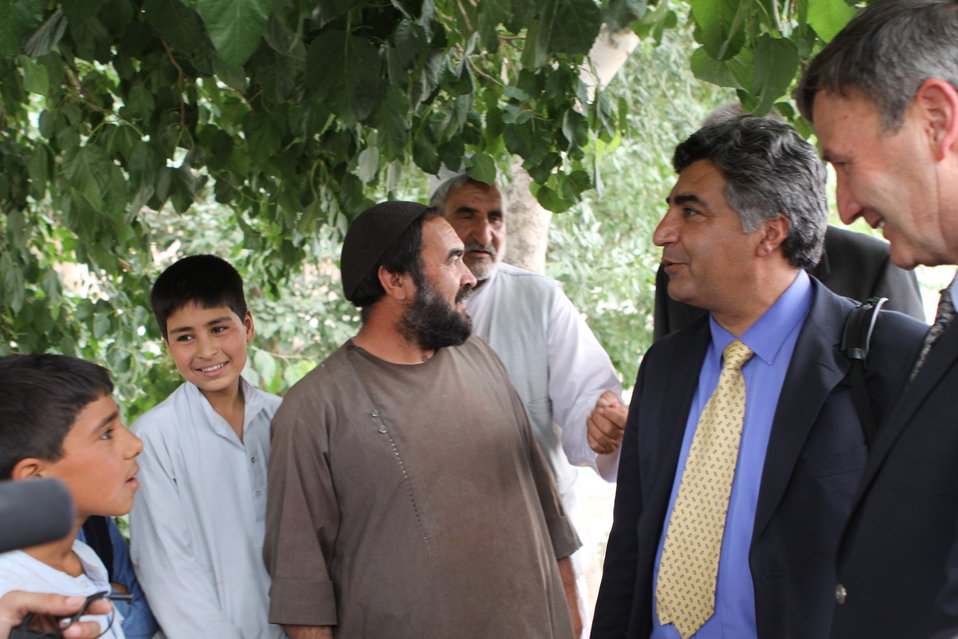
100525 Hirat Marble Conference 665